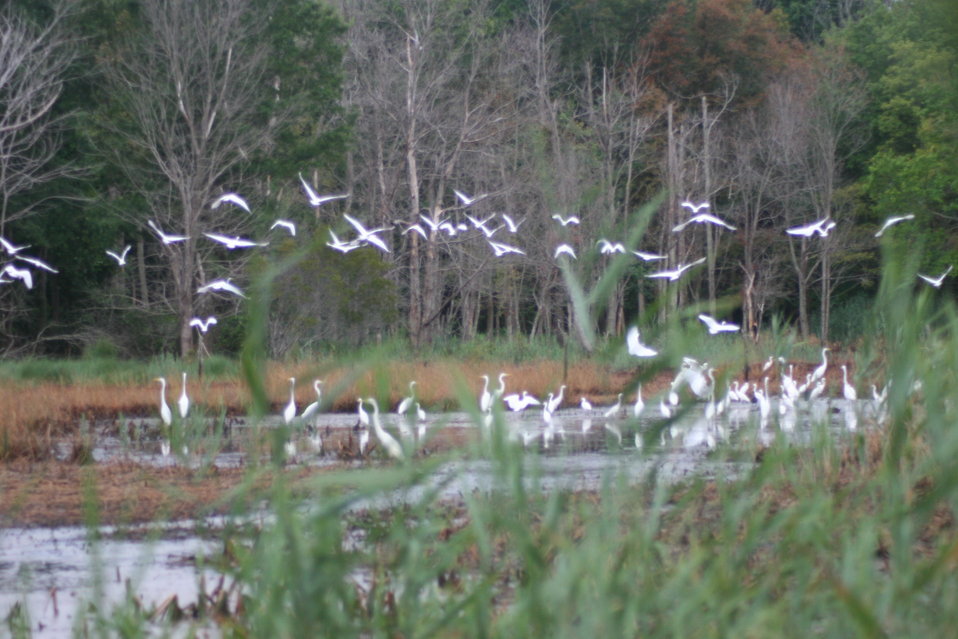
Egrets